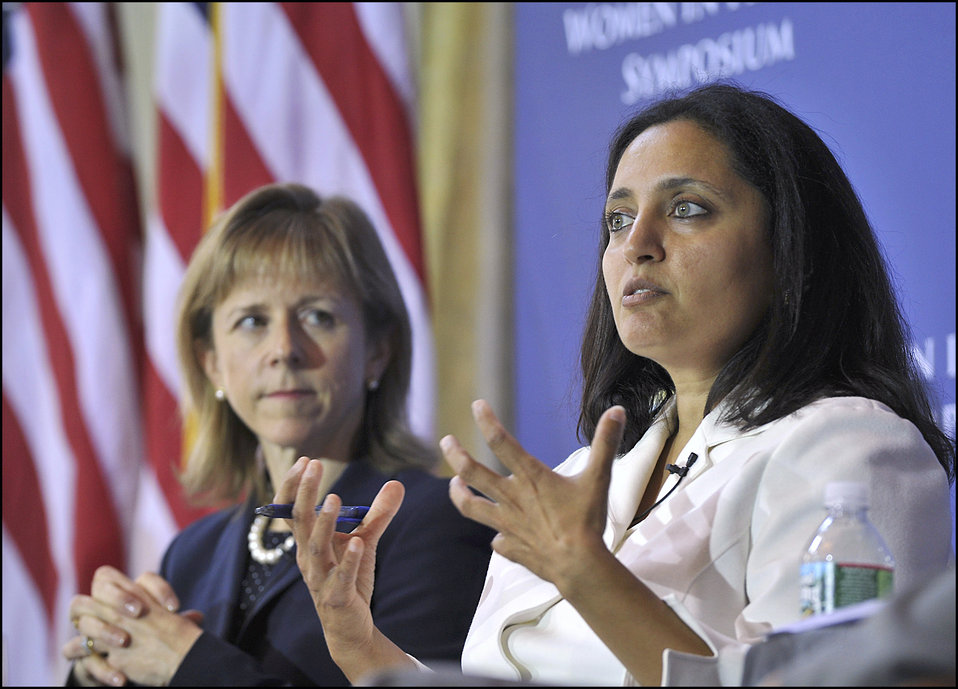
Women in Finance Investment Symposium

Kate Mitchell, Managing Director, Scale Venture Partners, listens as Sonal Shah, Director of the White House Office of Social Innovation, talks about investing in the economic recovery on panel three of the day.